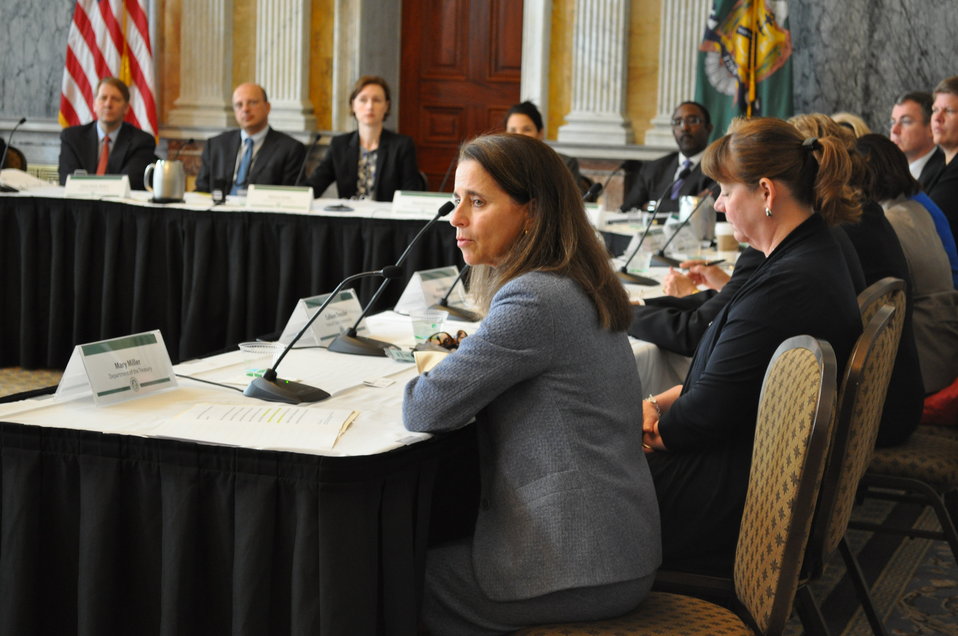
Under Secretary for Domestic Finance Mary Miller speaks at the Financial Literacy and Education Commission

Under Secretary for Domestic Finance Mary Miller discusses the new 'Starting Early' initiative of the Financial Literacy and Education Commission at their meeting.